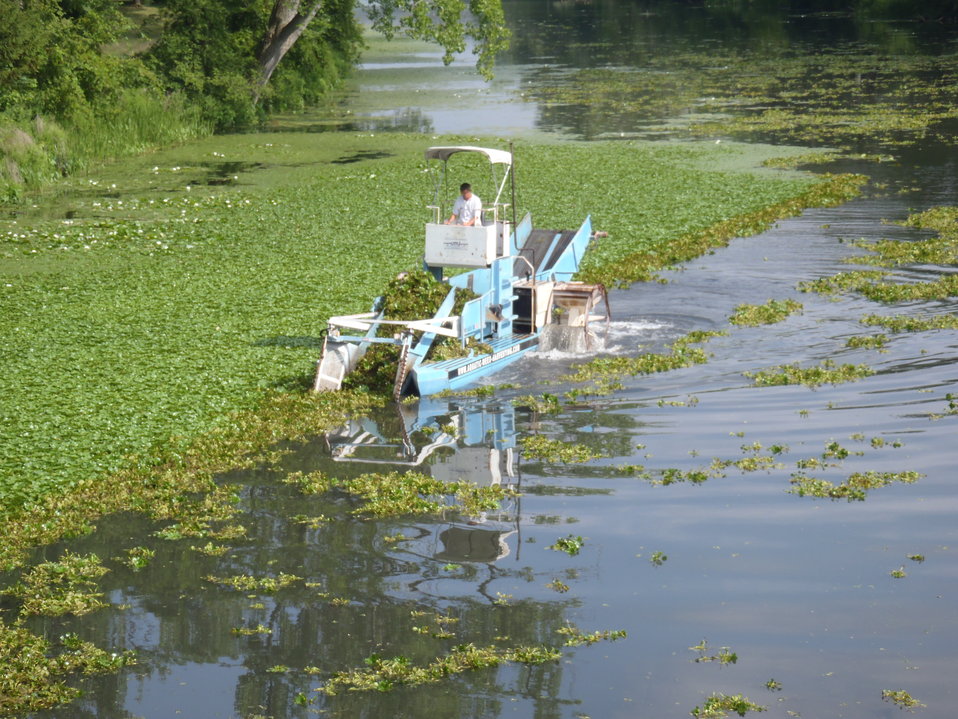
Water Chestnut Mechanical Harvesting in 2011

In 2010 and 2011, the Lower Great Lakes FWCO contracted with mechanical harvesting companies to harvest 6 acres of water chestnut from Tonawanda Creek in Ellicott Creek Park.